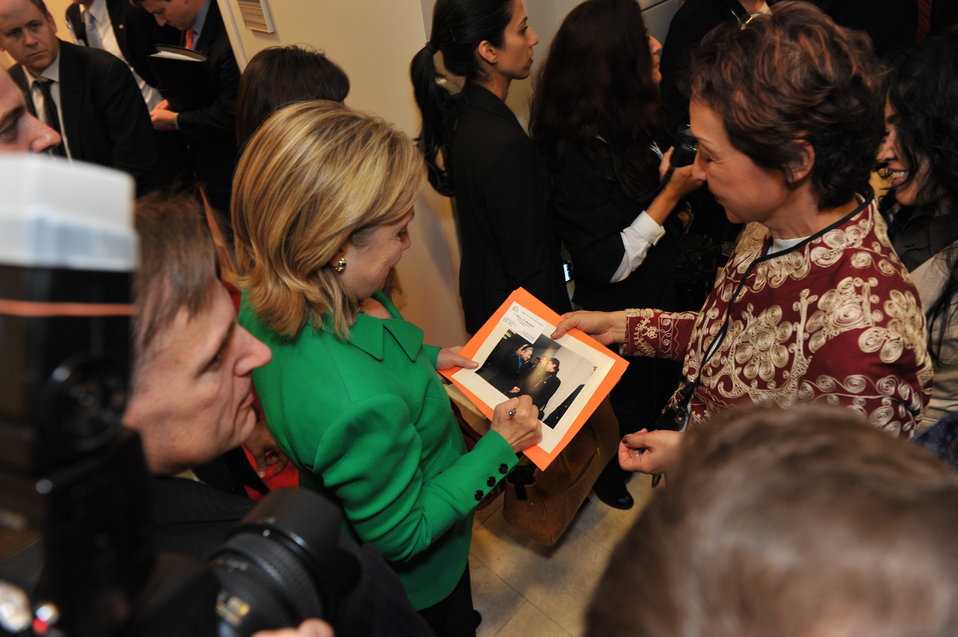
Secretary Clinton Signs a Photo for Public Affairs Assistant Muradova

U.S. Secretary of State Hillary Rodham Clinton signs a photo of her 1997 visit to Uzbekistan for Public Affairs Assistant Elnora Muradova at the U.S. Embassy Tashkent in Tashkent, Uzbekistan, on December 2, 2010.